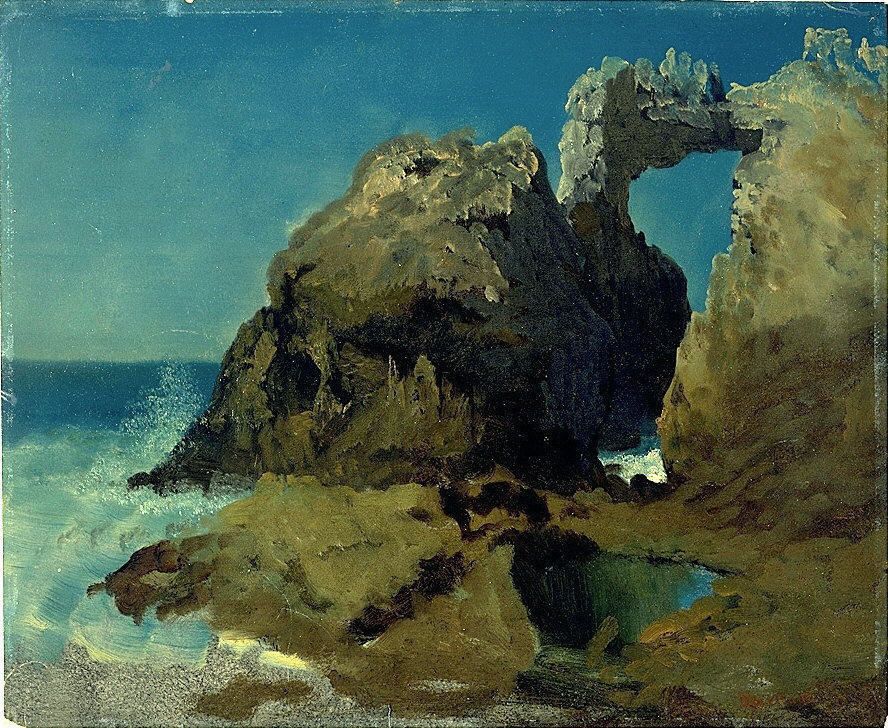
Albert Bierstadt - Farralones Islands, Pacific Ocean